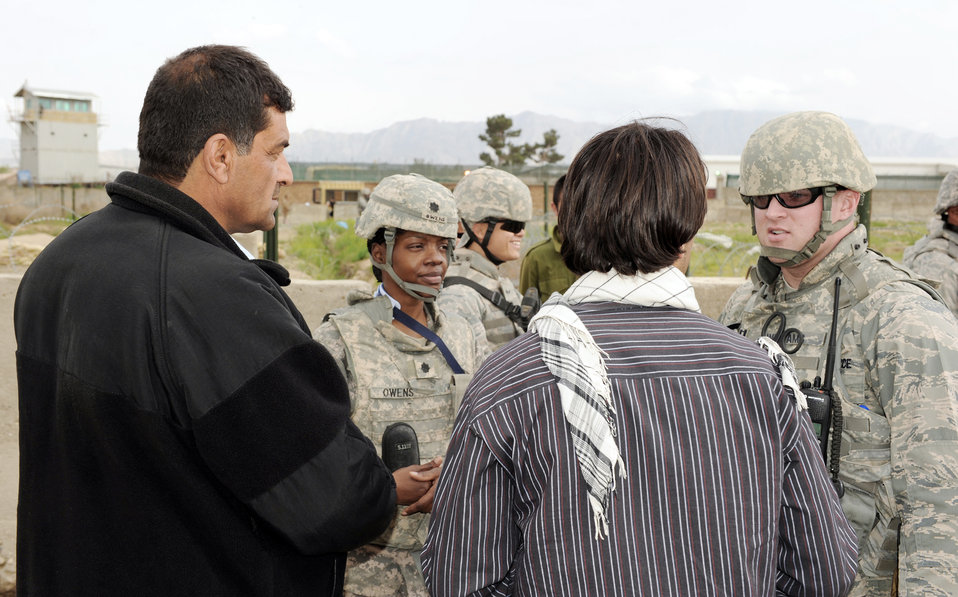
Operation Care

Army Lt. Col. Terry Owens and Capt. Jason Williams discuss item distribution with a village elder and an interpreter during a recent Operation Care humanitarian aid mission April 5, 2010, outside of Bagram Airfield, Afghanistan. Colonel Owens is the Operation Care president from the 30th Medical Command. Captain Williams is from the 455th Expeditionary Security Forces.